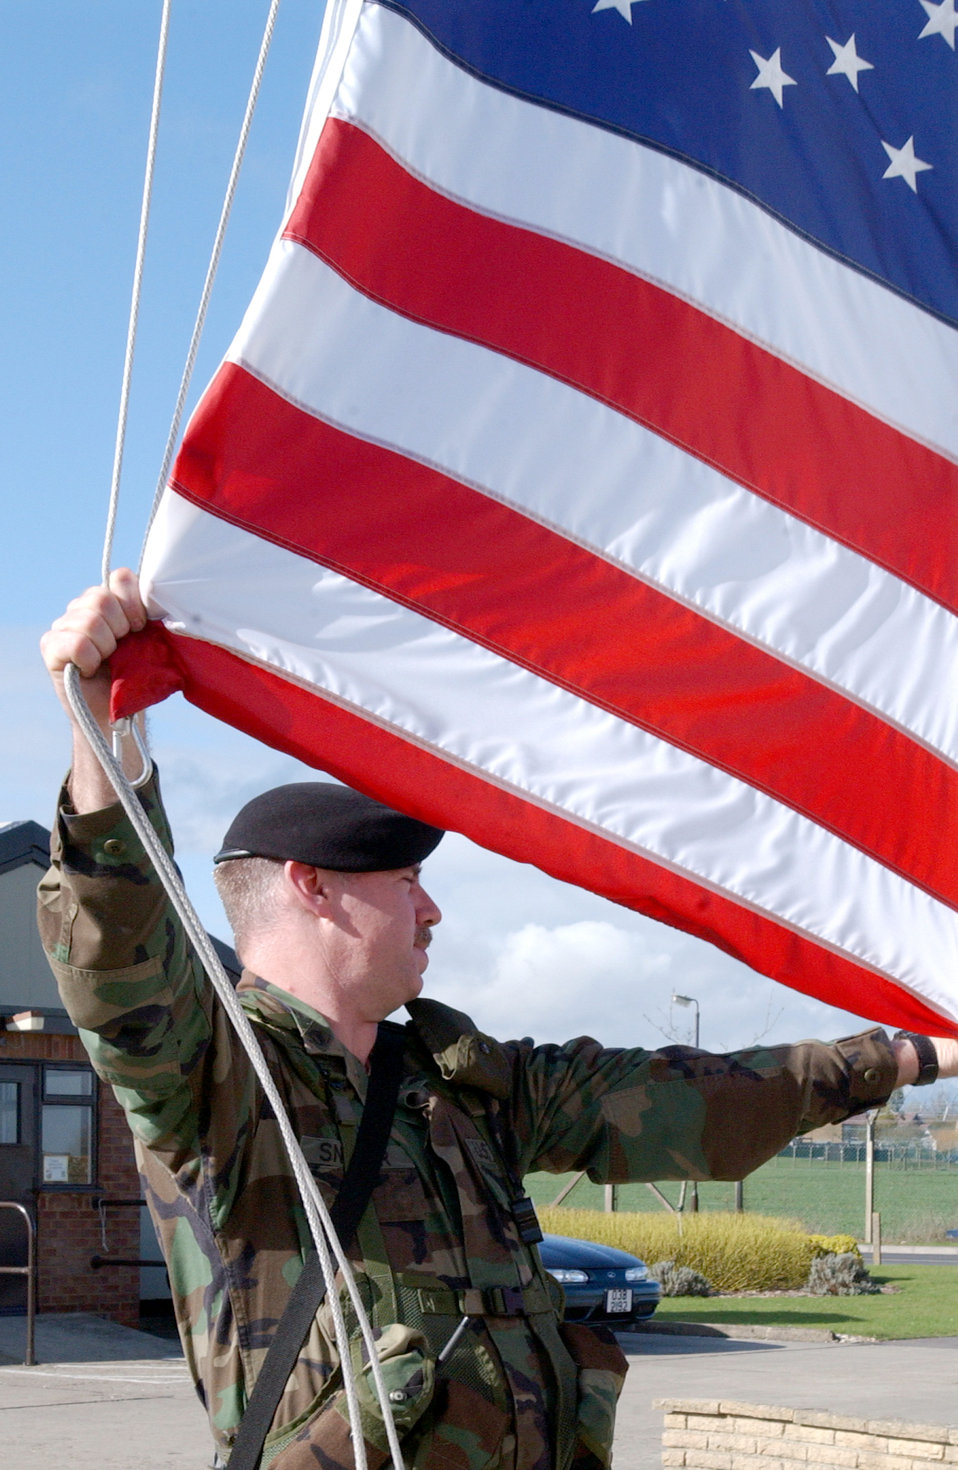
Evening Retreat

ROYAL AIR FORCE MILDENHALL, England - Army Staff Sgt. Christopher Snyder lowers the American flag during the evening retreat ceremony here April 5. Sergeant Snyder is an Army National Guardsman forward deployed here to augment the 100th Security Forces Squadron.